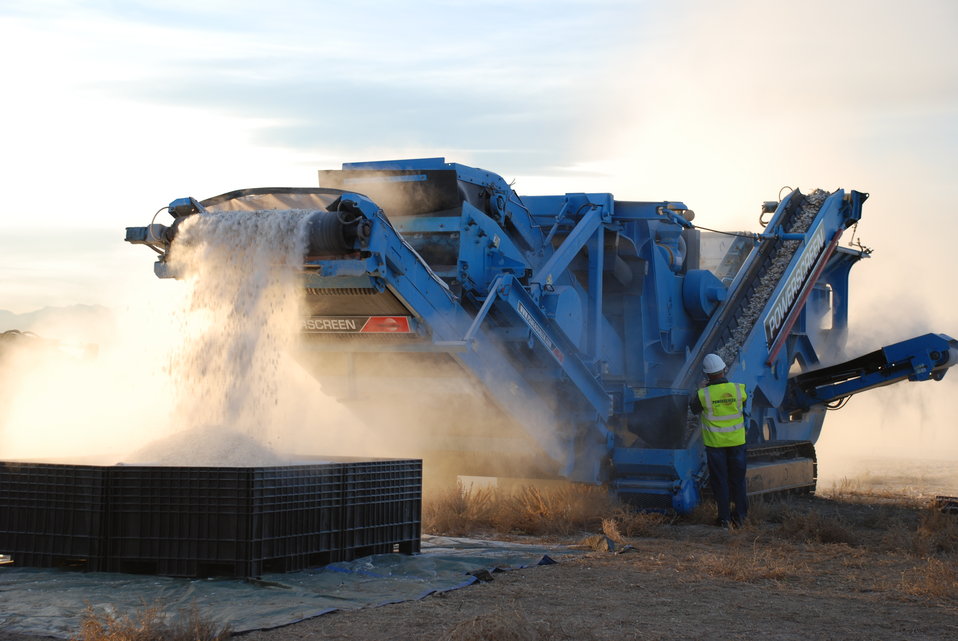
Ivory Crush 2013